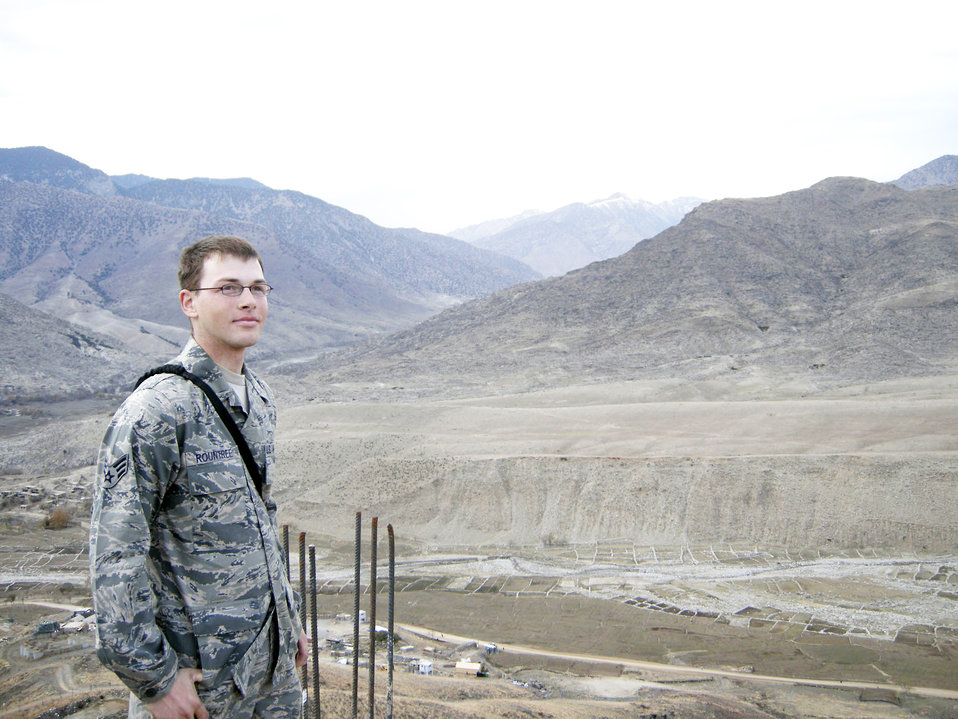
Airmen help Soldiers communicate in a virtual 'SNAP'

Senior Airman Randell Rountree takes a break to get a good view of the mountains at his remote location in Eastern Afghanistan. Airman Rountree is deployed from the 1st Communication Squadron at Langley Air Force Base, Va., is the one Airman that Soldiers at their combat outpost depend upon for all of their Internet and telephone communications.